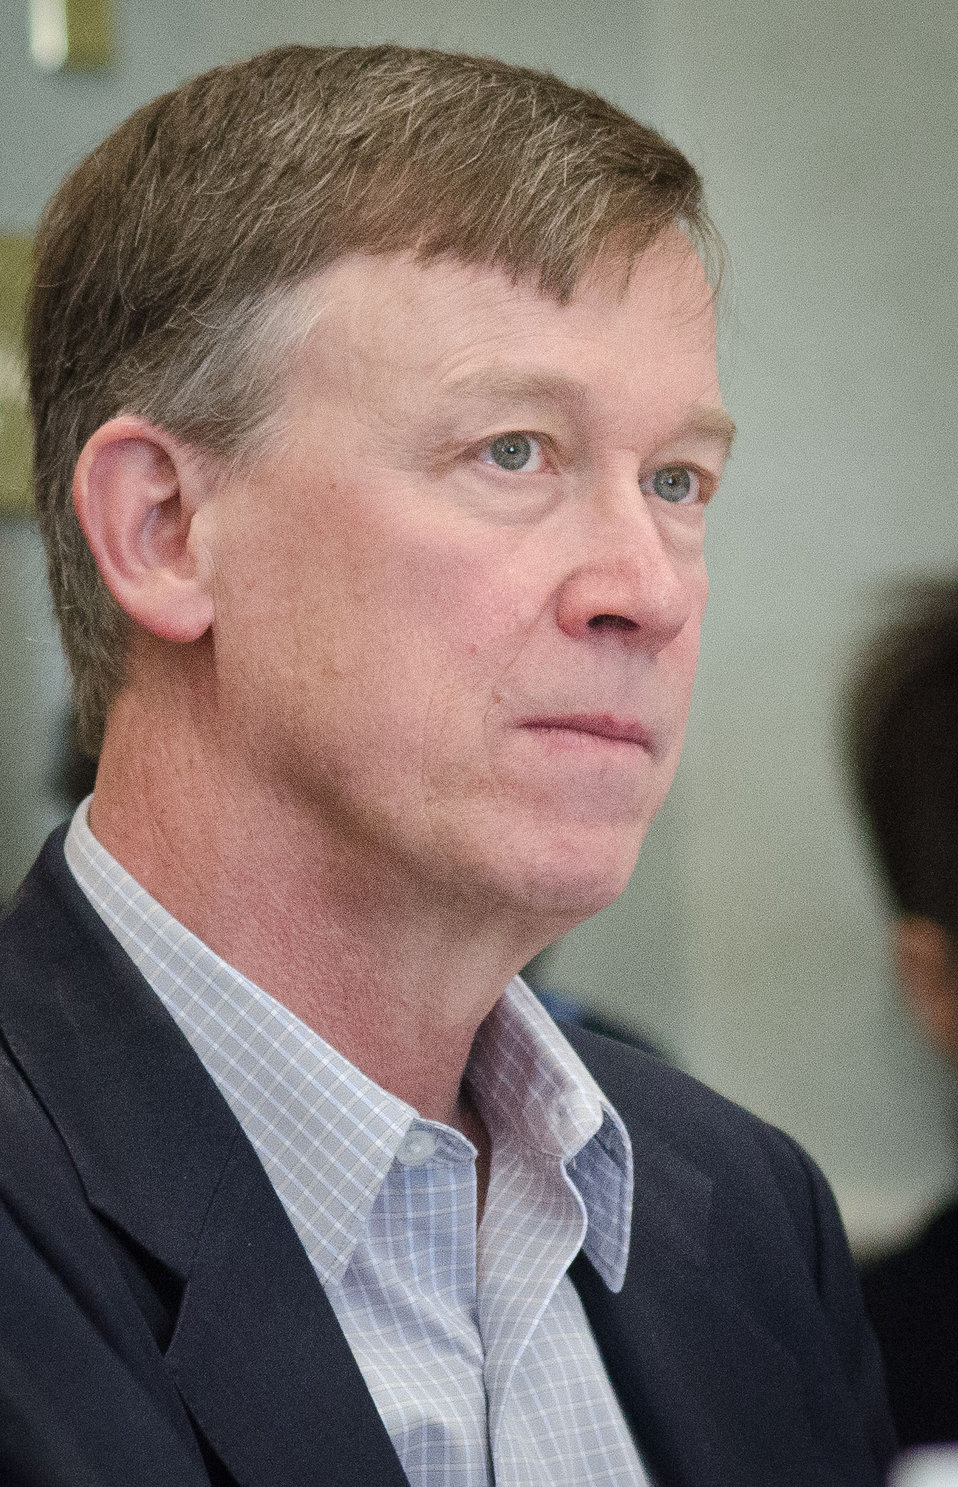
Colorado Governor John Hickenlooper listens to Agriculture Secretary Tom Vilsack speak at a breakfast he hosted a breakfast for Western Governors and Federal Officials, in the Lincoln Room at the United States Department of Agriculture headquarters, in Washington, D.C. on Sunday, February 26, 2012.